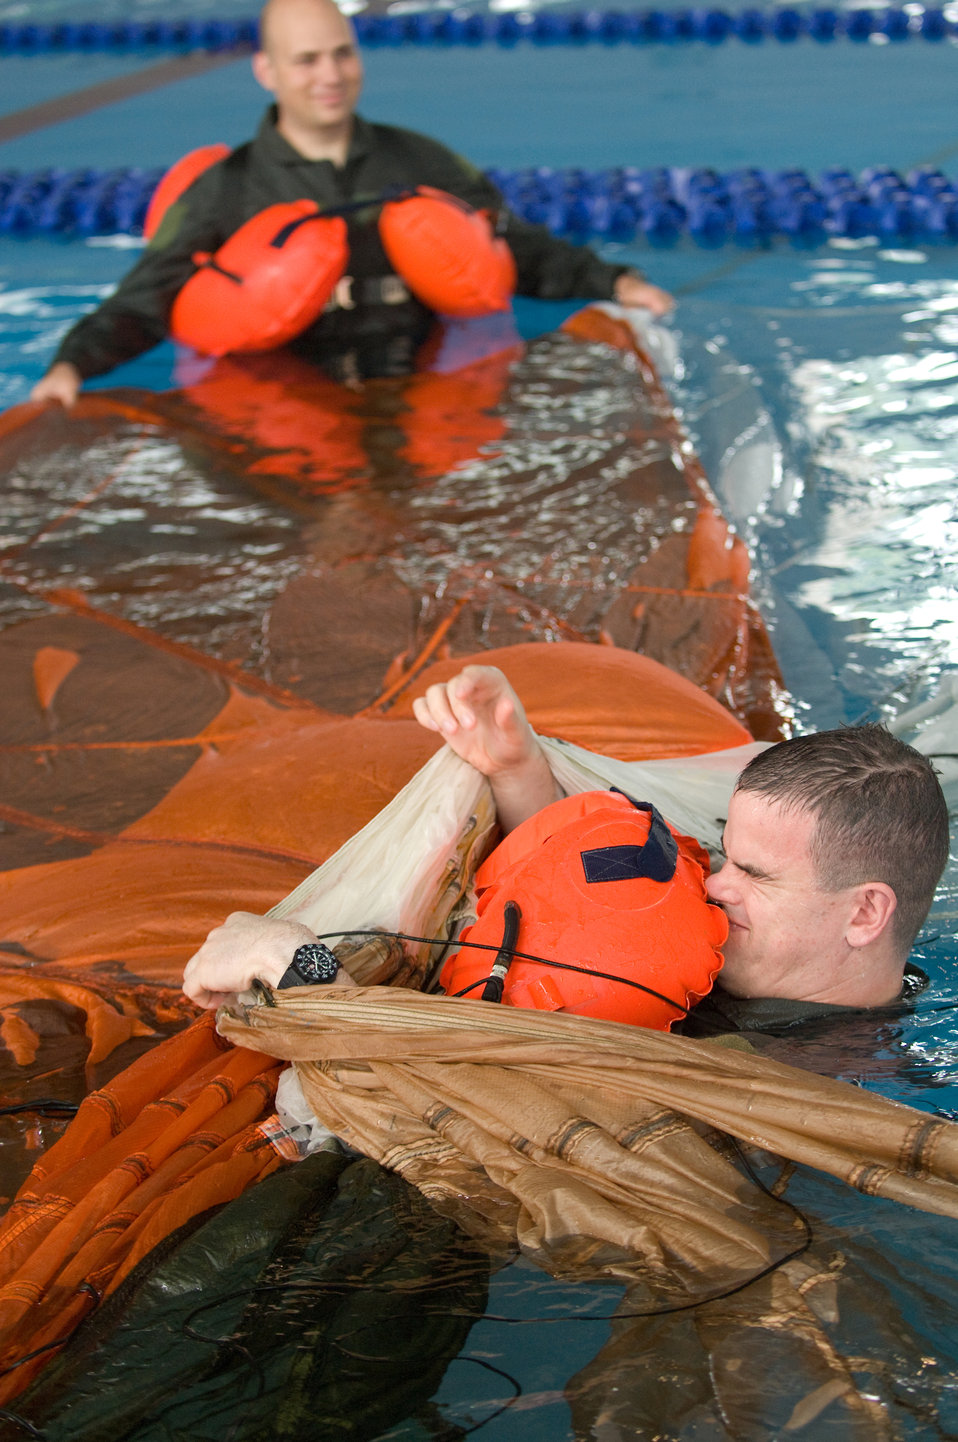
No easy day at the pool

Maj. Wesley Kirk extricates himself from a parachute canopy during water survival refresher training recently at the natatorium indoor pool at Yokota Air Base, Japan. Survival, evasion, resistance and escape technicians teach the course to aircrew members at least once every three Major Kirk is a pilot with the 36th Airlift Squadron.